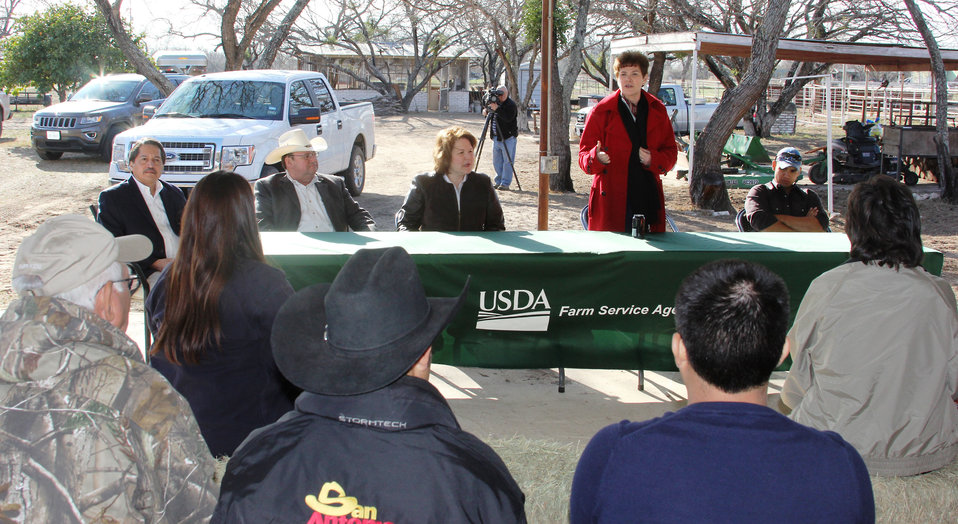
U.S. Department of Agriculture (USDA) Texas agency leaders, including Rural Development (RD) Daniel Torres, Texas State Conservationist, Natural Resources Conservation Service (NRCS) Salvador Salinas, and Texas State Executive Director Judith Canales join Agriculture Deputy Secretary Krysta Harden as they visit with South Texas farmers and ranchers about Strikeforce at Miguel Ruiz’s ranch in Lytle, TX on Thursday, Feb. 27, 2014.